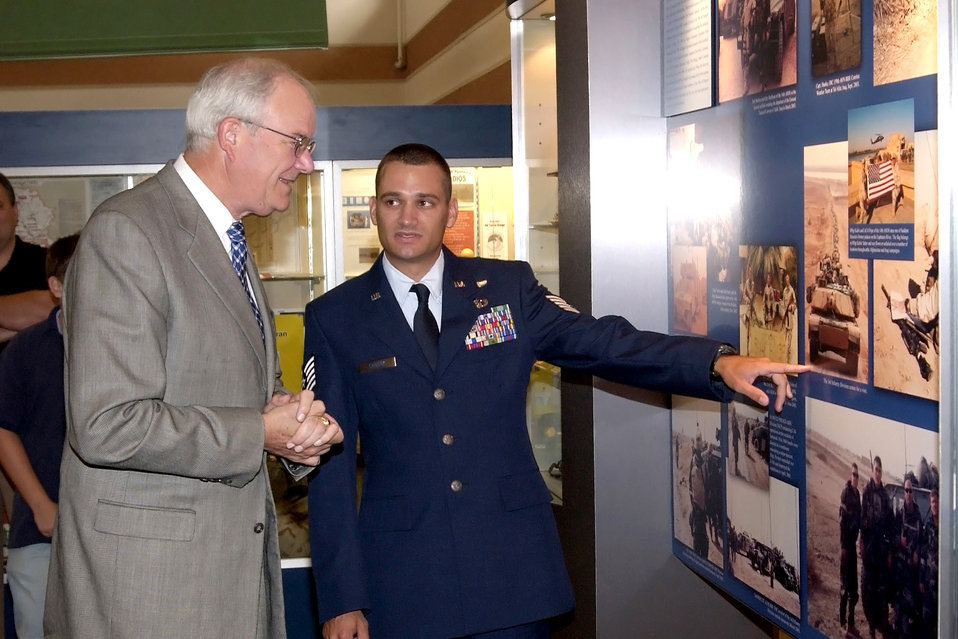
Silver Star

Tech. Sgt. Travis Crosby explains the photos on display in Heritage Hall of the 18th Air Support Operations Group headquarters at Pope Air Force Base, N.C., to Air Force Secretary Michael Wynne on Monday, June 26. Secretary Wynne later presented Sergeant Crosby with the Silver Star during a ceremony for heroic actions while deployed in support of Operation Iraqi Freedom in 2003. Sergeant Crosby is a member of a tactical air control party with the 15th Air Support Operations Squadron.